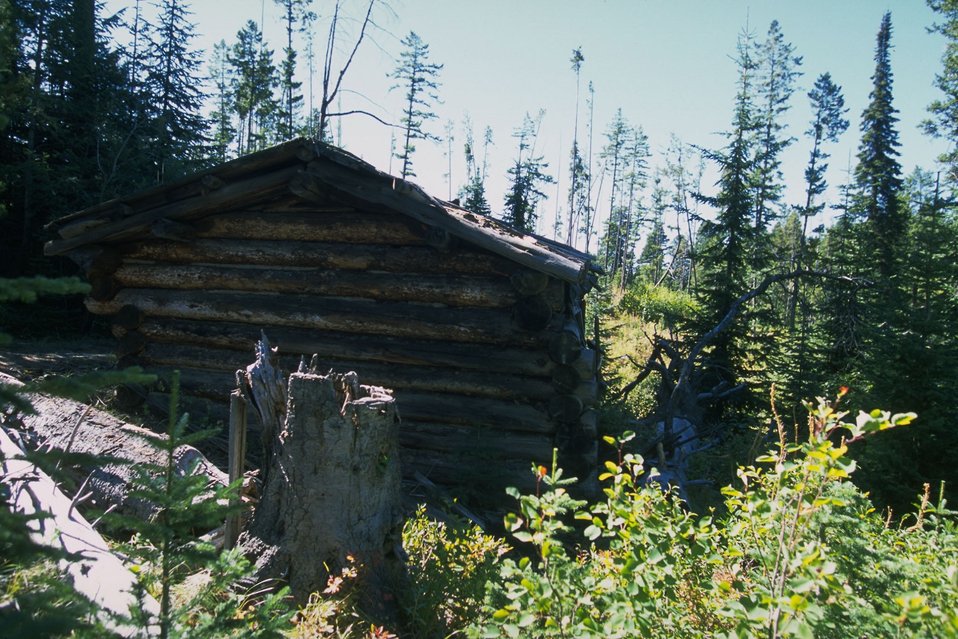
Historic cabin in Coloma Ghost Town